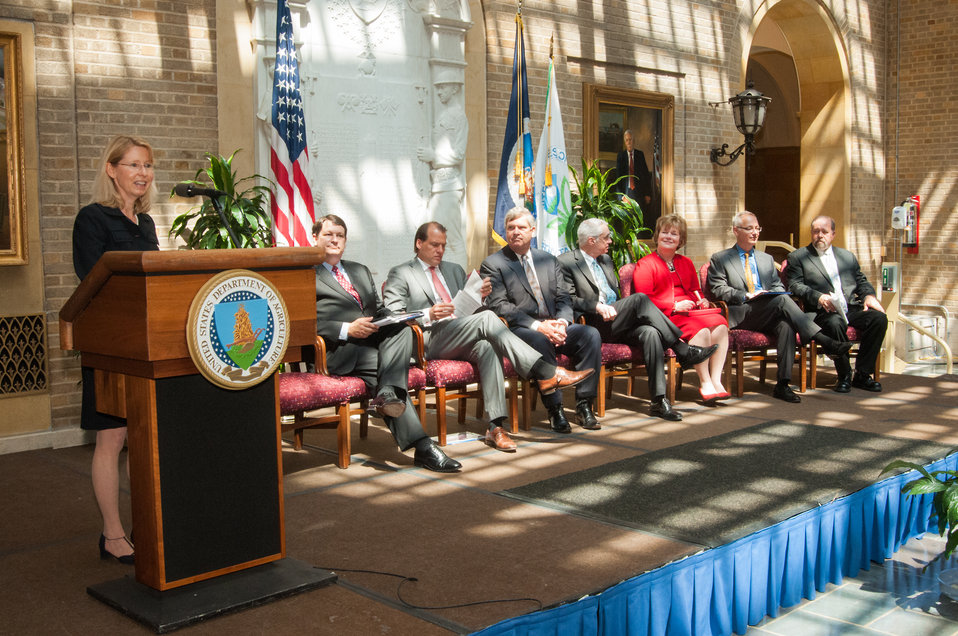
U.S. Department of Agriculture (USDA) Office of the Chief Economist (OCE) Sustainability Director Elise Golan introduces the speakers at the U.S. Food Waste Challenge sponsored by USDA and the Environmental Protection Agency (EPA) at USDA in Washington, D.C. on Tuesday, Jun. 4, 2013. The U.S. Food Waste Challenge is a nationwide effort to reduce, recover and recycle U.S. food waste. Representatives from Gills Onions/Rio Farms, Unilever, Food Marketing Institute, National Restaurant Association, Grocery Manufacturers Association, Food Waste Reduction Alliance, Feeding America and Rock and Wrap It Up! were also present.